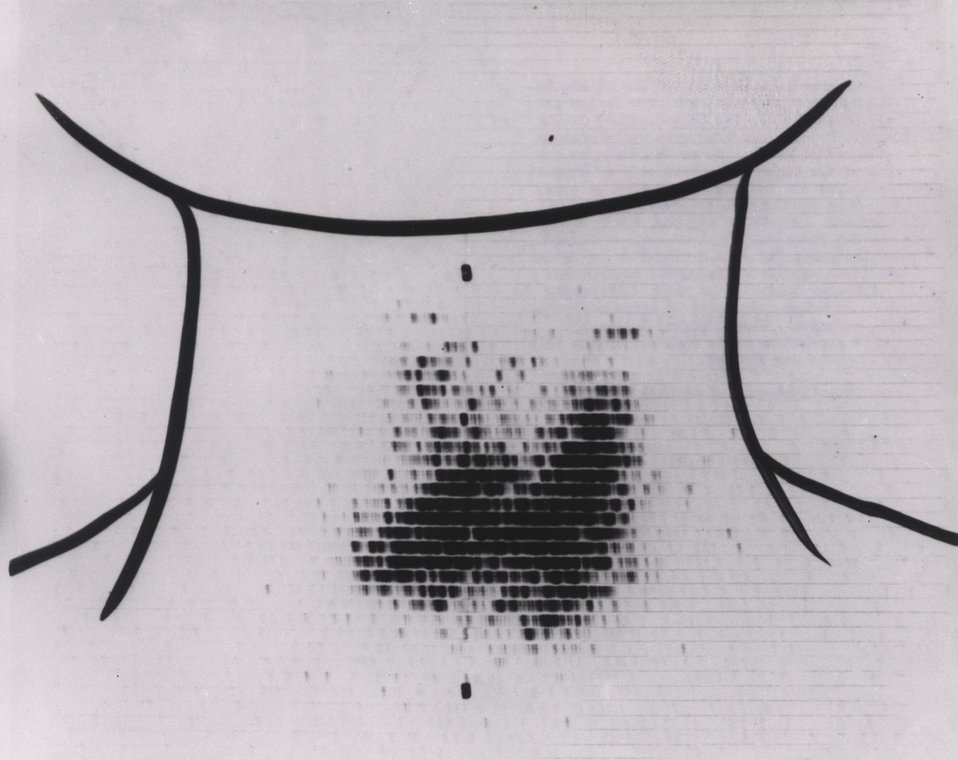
DIAGNOSTIC USE OF IODINE 130...Comparisons of scans made with Iodine 131 (AEC-66-7783) and Iodine 130 (AEC-66-7784) in the same patient, demonstrate that both radioisotopes can provide useful scans. c. 1966